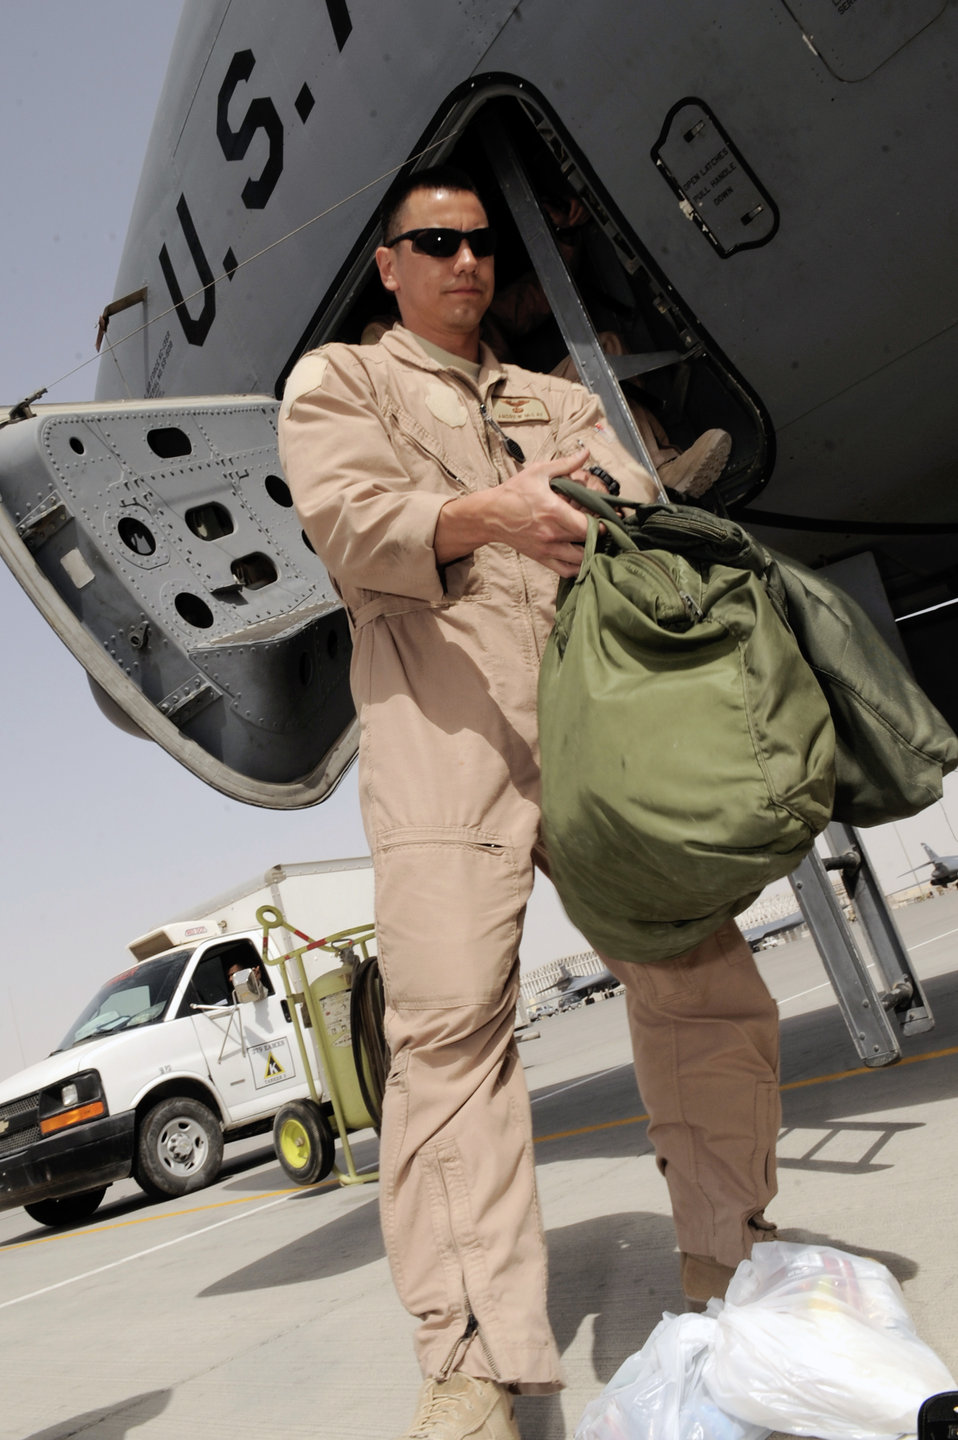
Refuelers keep mission soaring

Capt. Andrew McLay, a pilot with the 340th Expeditionary Air Refueling Squadron at an air base in Southwest Asia, prepares to load his gear into a KC-135 Stratotanker before a refueling mission.